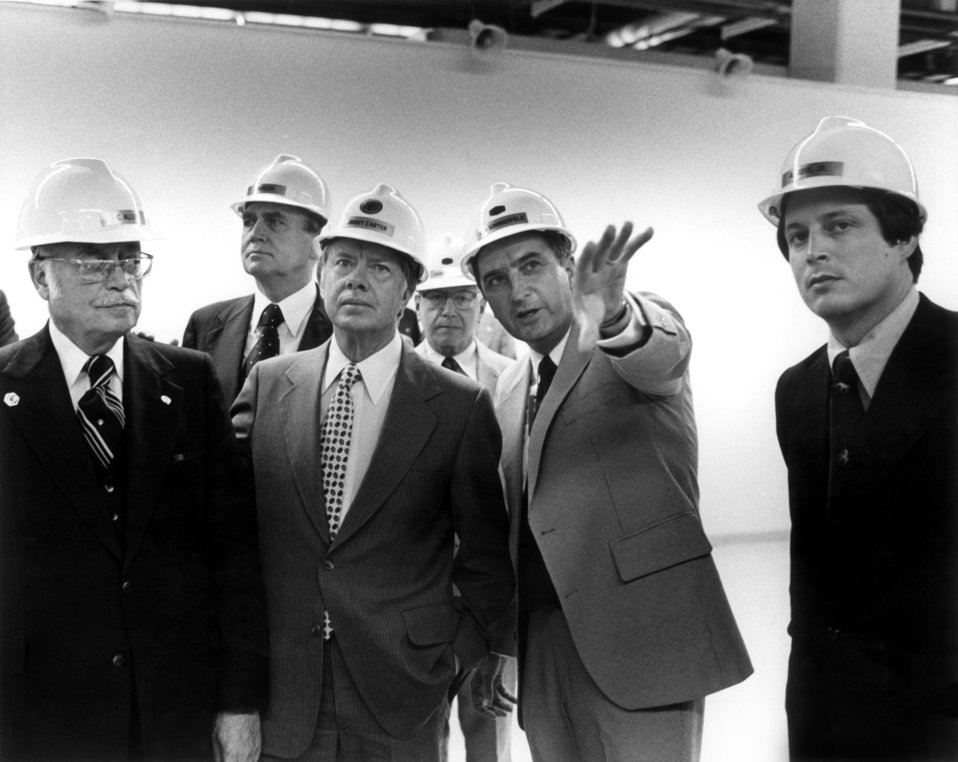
President Carter

President Jimmy Carter visited Oak Ridge in 1978. He is accompanied by then Rep. Al Gore.